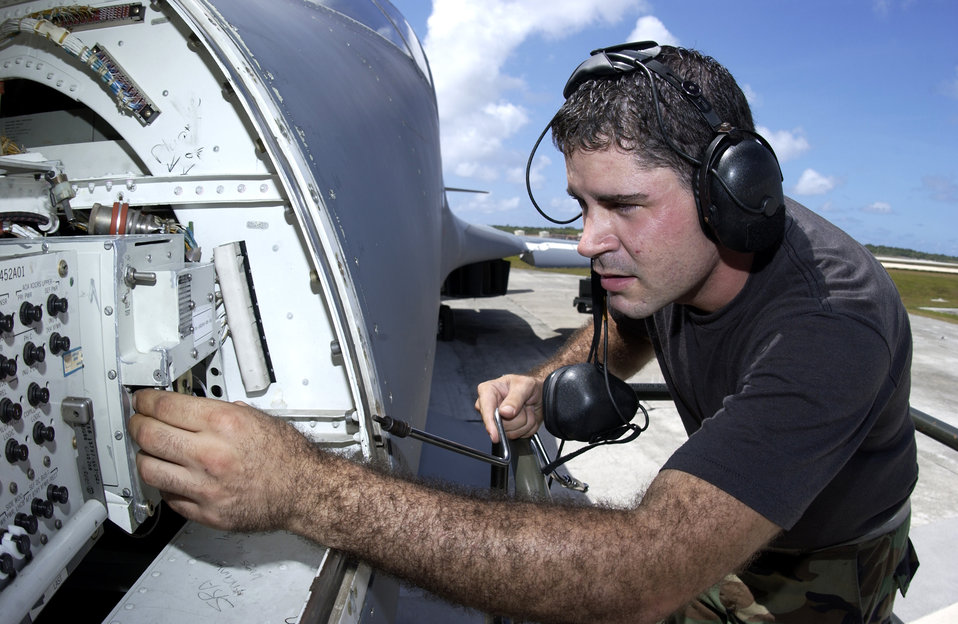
Presence in the Pacific

Airman 1st Class Francis Pacheco performs maintenance on avionics equipment in a B-1B Lancer Monday, April 17, 2006, at Andersen Air Force Base, Guam. He is assigned to the 36th Expeditionary Aircraft Maintenance Squadron.